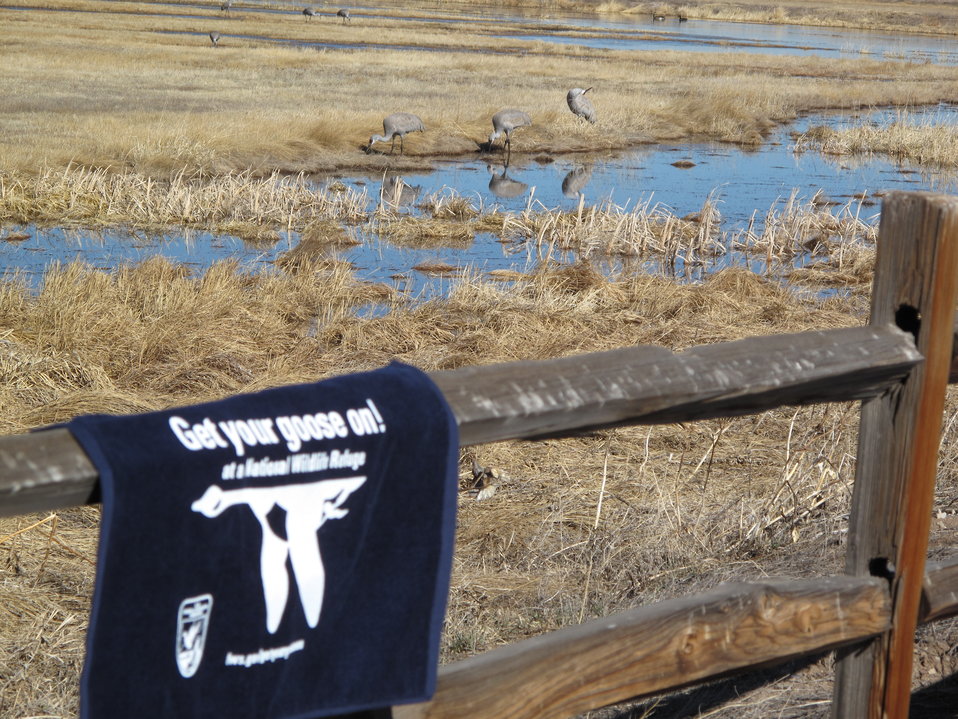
Get Your Goose On! at Monte Vista NWR

Note the sandhill cranes in the background.